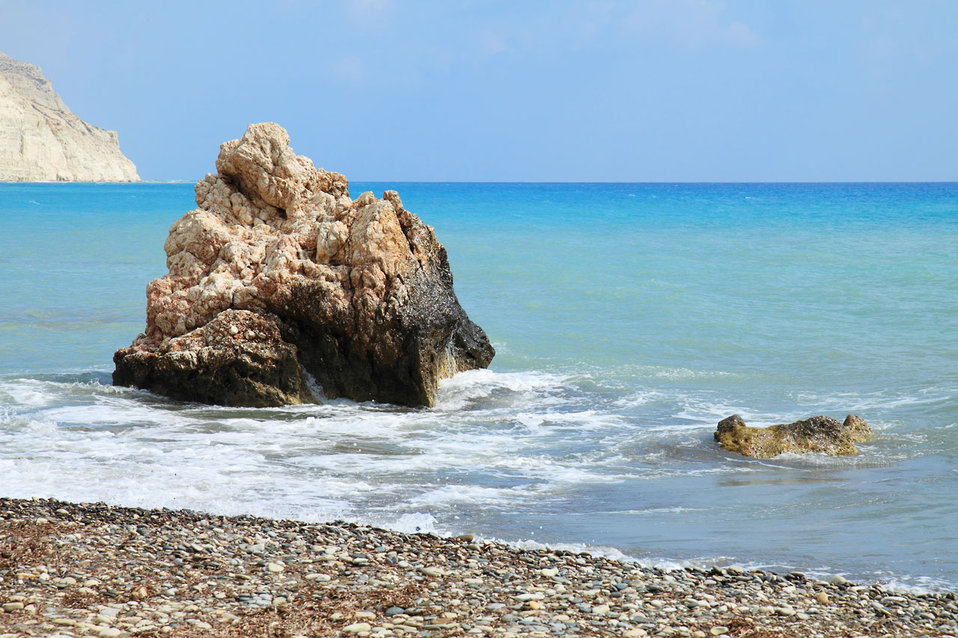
Rock in sea

A piece of rock in sea.